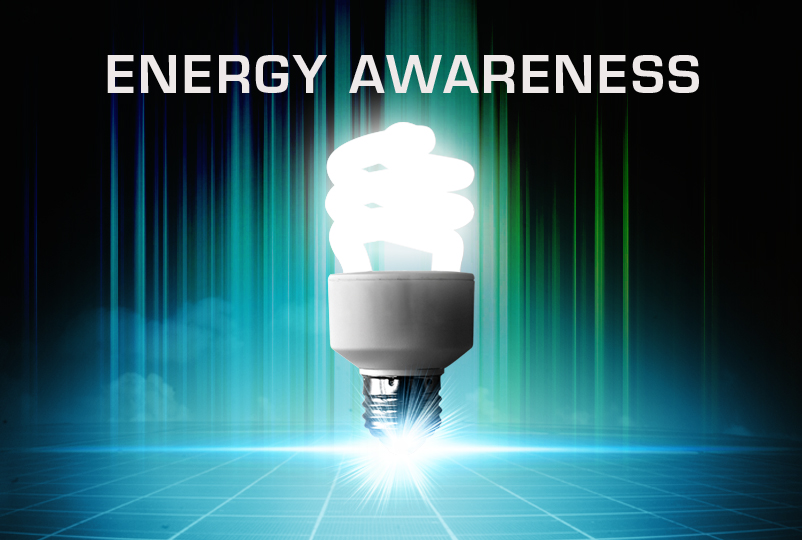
Energy